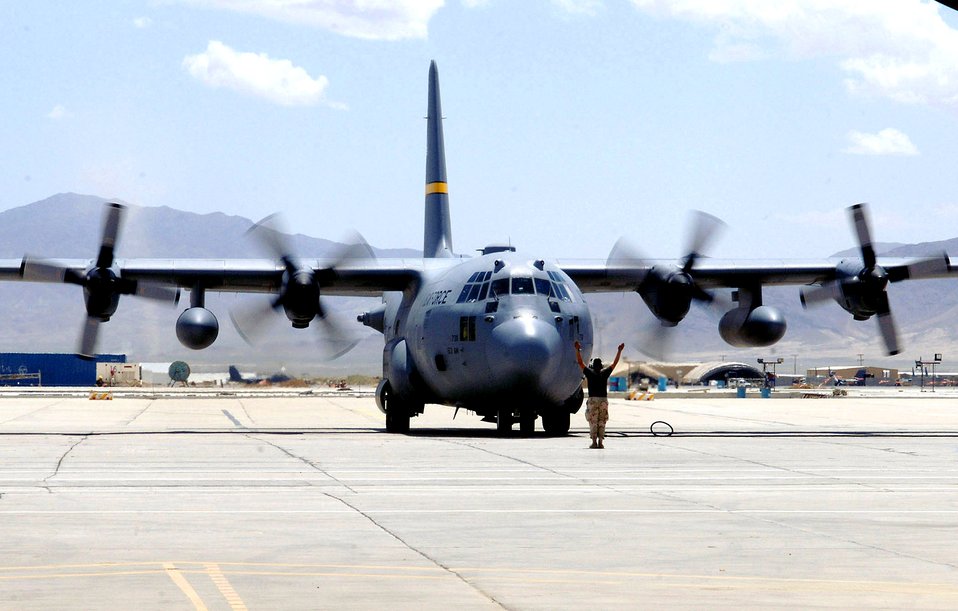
Airpower summary for Sept. 20, 2007

A C-130 Hercules crew chief from the 455th Expeditionary Maintenance Group marshals a Hercules to its parking spot on the flightline at Bagram Airfield, Afghanistan. C-130s provide intra-theater airlift support to sustain operations throughout Southwest Asia.